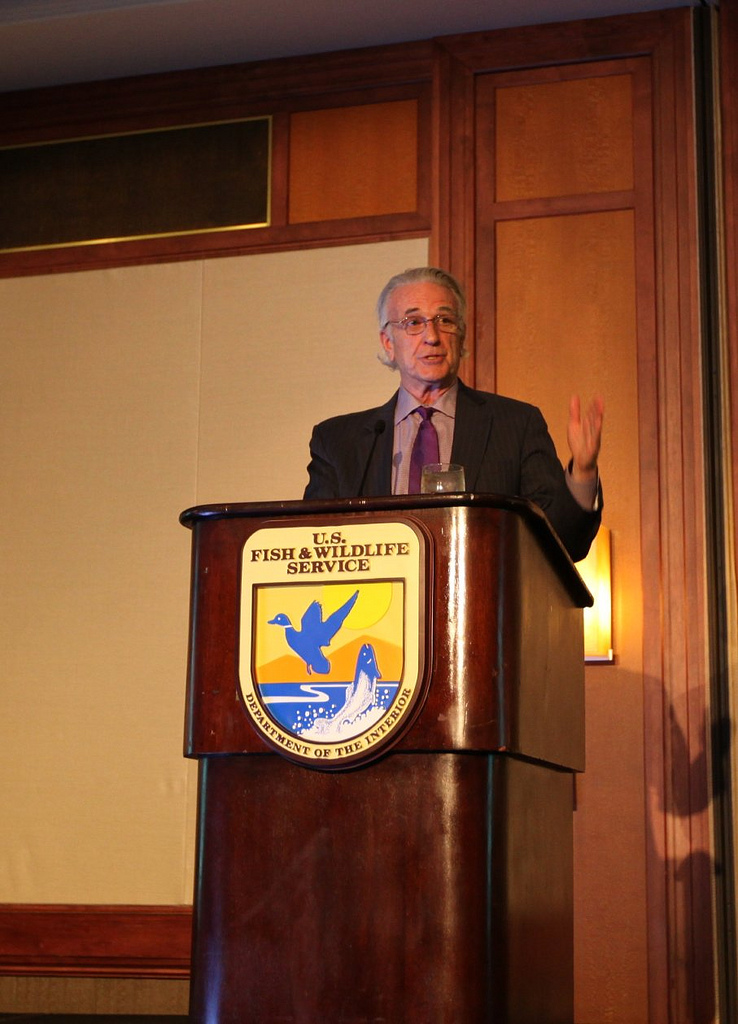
John Griffin, Maryland Secretary of Natural Resources

John R. Griffin, Maryland Secretary of Natural Resources, speaking at the Northeast Region Biologists Conference.